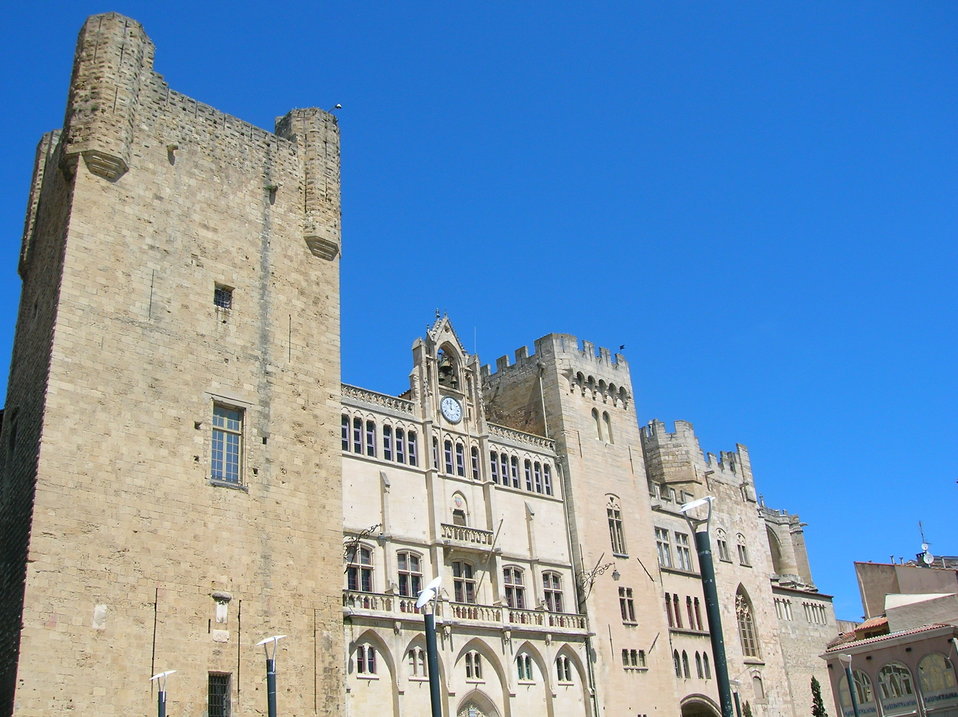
Town hall of Narbonne (France). Former archbishop palace.
Français : Mairie de Narbonne (France). Ancien palais des archevêques.